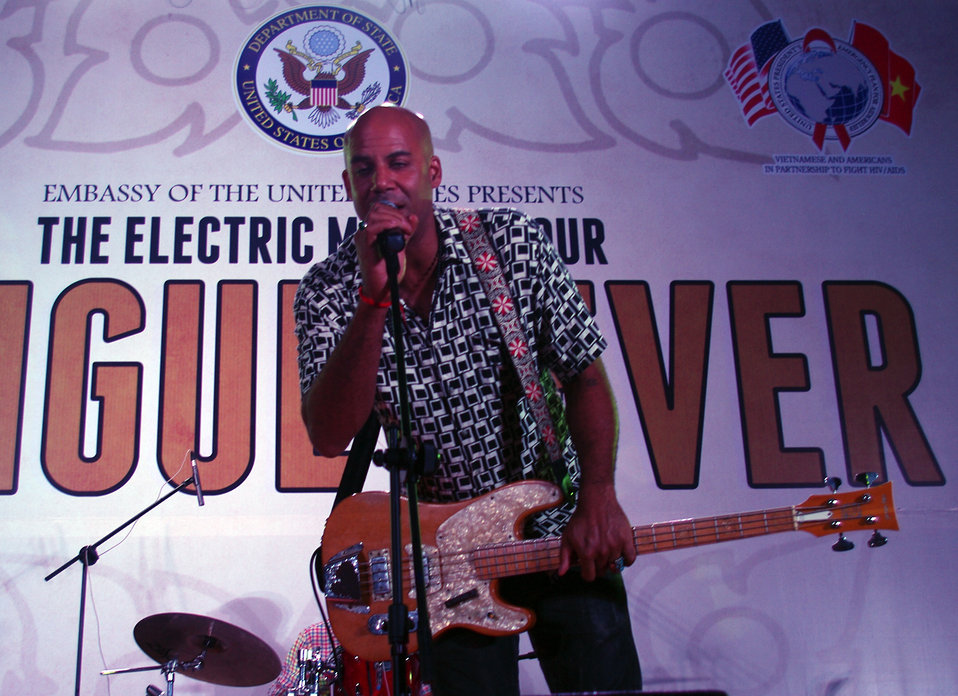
PEPFAR, U.S. Embassy Host Dengue Fever Concert in Hanoi